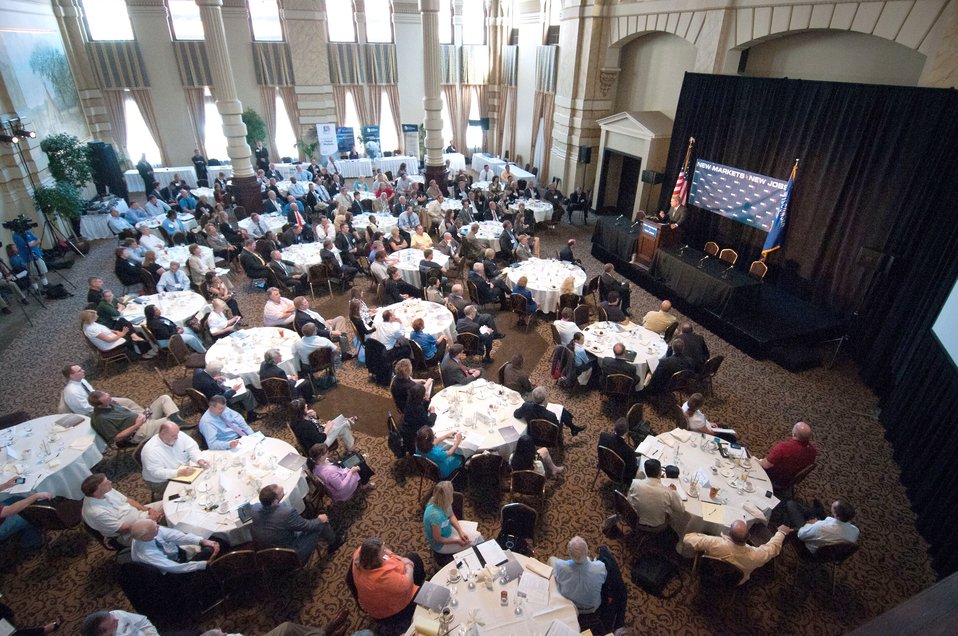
Agriculture Secretary Tom Vilsack speaks at the National Export Initiative (NEI) Small Business Tour in Milwaukee, WI, on Wednesday, August 3, 2011. An important goal of the NEI is to provide additional assistance to small and medium-sized businesses, which are major drivers of job creation. The NEI is assisting small and medium-sized businesses win more foreign government contracts, find buyers worldwide, participate in more trade missions and trade shows, receive more export financing, and learn new ways to sell products and services overseas.